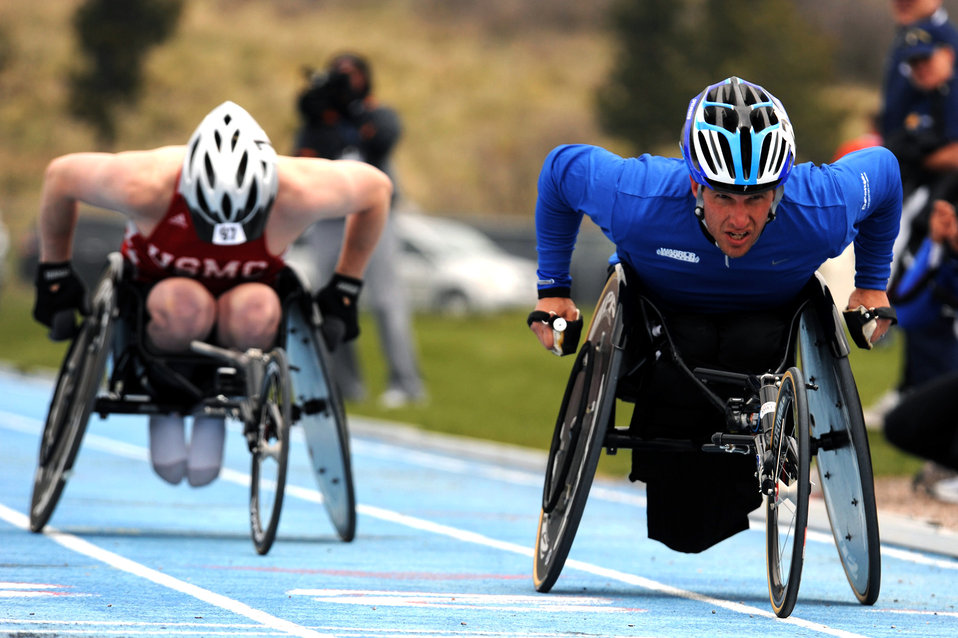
Pushing hard

Air Force team member Jason Morgan stays ahead of a Marine competitor in the 1,500-meter wheelchair race during the Warrior Games May 14, 2010, at the U.S. Air Force Academy track in Colorado Springs, Colo.